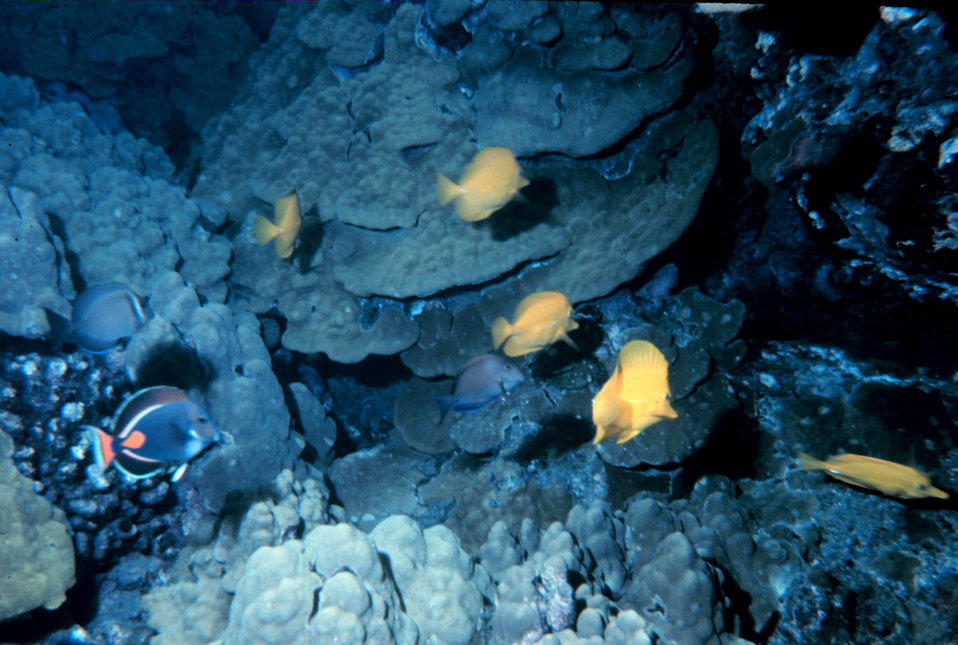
Acanthurus Achilles, Achilles Tang in lower left Zebrasoma Flavescens, Yellow Tangs; large Porites sp. coral in background